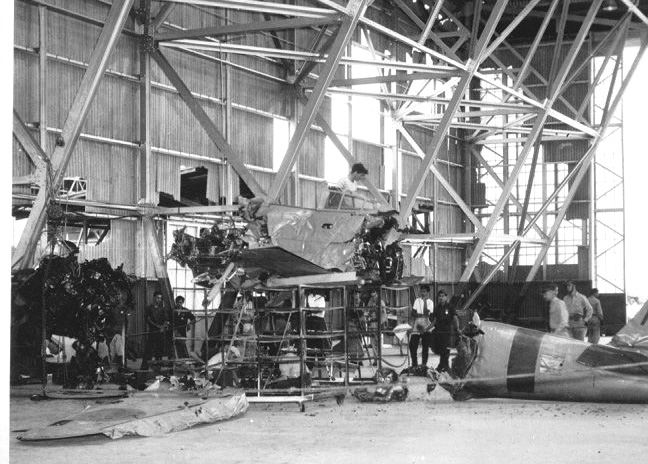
Japanese Zero

Wreckage from a Japanese Zero sits in a Hickam Field hangar after the Dec. 7 attacks.